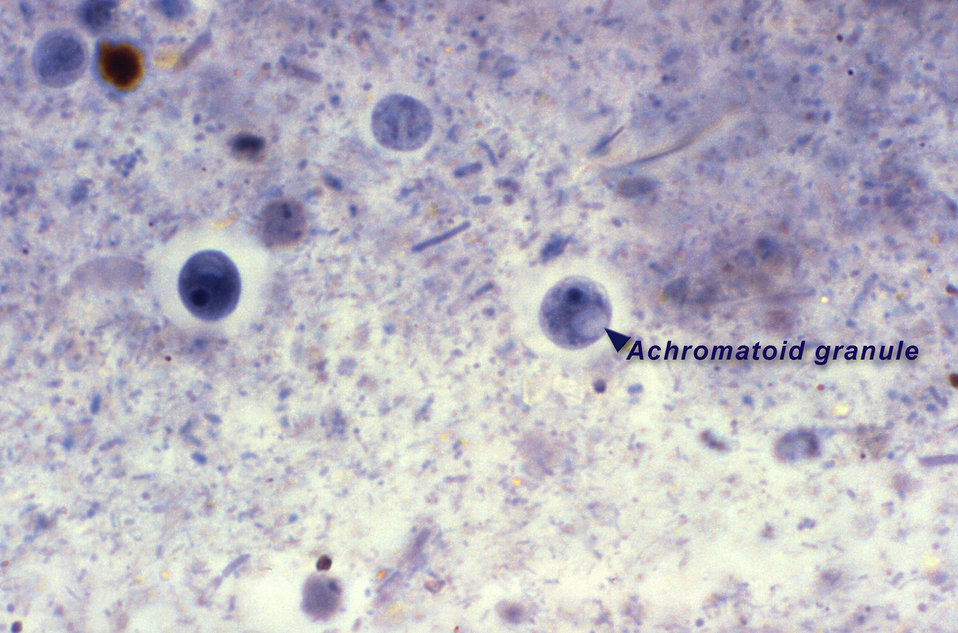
This iron-hematoxylin-stained photomicrograph depicts two spheroid Iodamoeba buetschlii parasitic cysts. The cyst at right contains a clearly visible achromatoid granule within its cytoplasm (arrow).